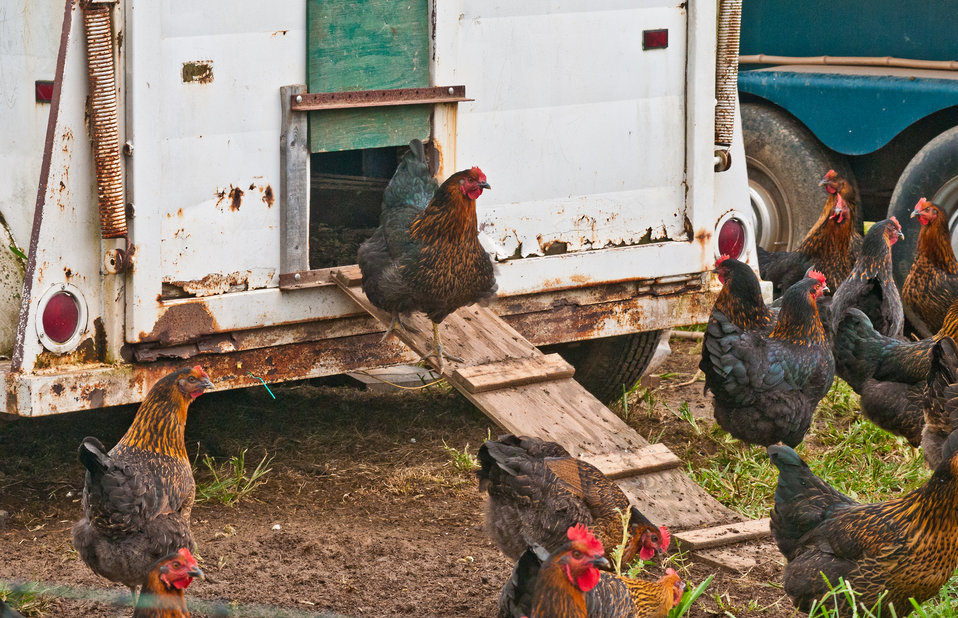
Laying hens freely enter and exit discarded horse trailers have been repurposed as safe sturdy mobile coops that can be easily relocated on Nick’s Organic Farm, in Adamstown, MD, on Friday, July 12, 2013. The farm, owned by Nick Maravell, produces Black Angus beef, chicken, turkey, eggs, hay, soybeans, corn, alfalfa, orchard grass, rye; and other crops. The cattle are100% grass-fed receiving certified organic pasture, certified organic hay (in winter), water and mineral salts mixed with sea kelp. The cattle are not fed hormones, antibiotics or animal products. Poultry feed from grain is ground from organic grain. The poultry also graze on organic pastures. The farm has conducted on-farm research with federal, state and non-profit agencies to refine organic practices. An organization such as the U.S. Department of Agriculture (USDA) Agricultural Research Service (ARS) center in Beltsville has been able to conduct research to improve organic crops and to breed and manage the cattle so that they have.